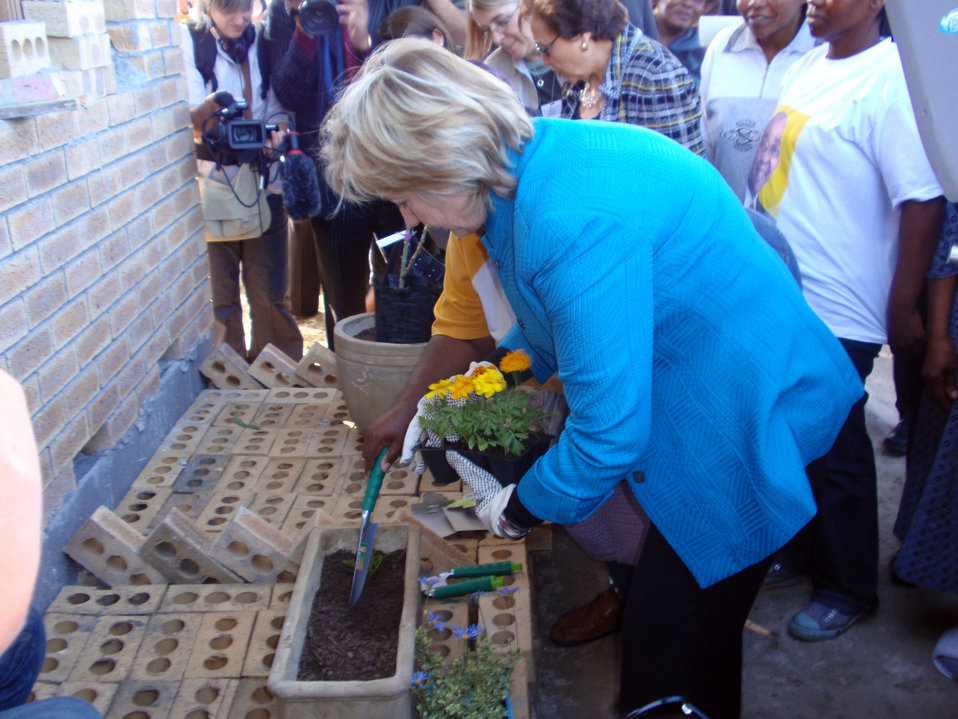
Secretary Clinton Visits Victoria Mxenge Housing Development

U.S. Secretary of State Hillary Rodham Clinton plants flowers at the Victoria Mxenge Housing Development in Cape Town, South Africa August 8, 2009.